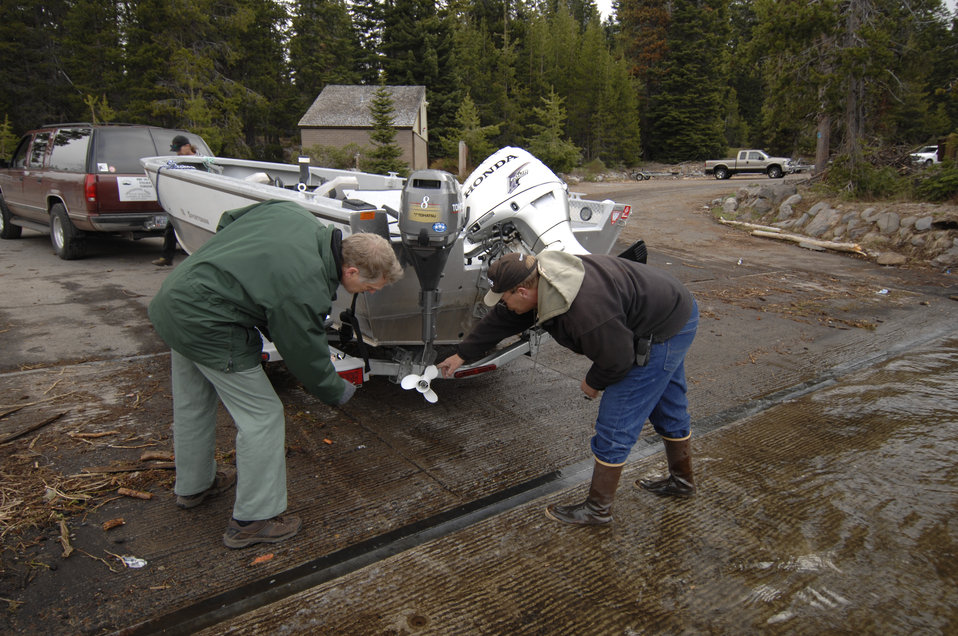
Oregon Guide Service agent Al Johnson and Forest Service Hydrologist Chuck Clearman check the underside of a boat at Diamond Lake in Oregon on June 10, 2008 for aquatic invasive species. A species is considered invasive it is nonnative to the ecosystem and its introduction causes or is likely to cause economic or environmental harm or harm to human health. The goal of the U.S. Department of Agriculture’s (USDA) Forest Service (FS) invasive species program is to reduce, minimize, or eliminate the potential for introduction, establishment, spread, and impact of invasive species across all landscapes and ownerships.